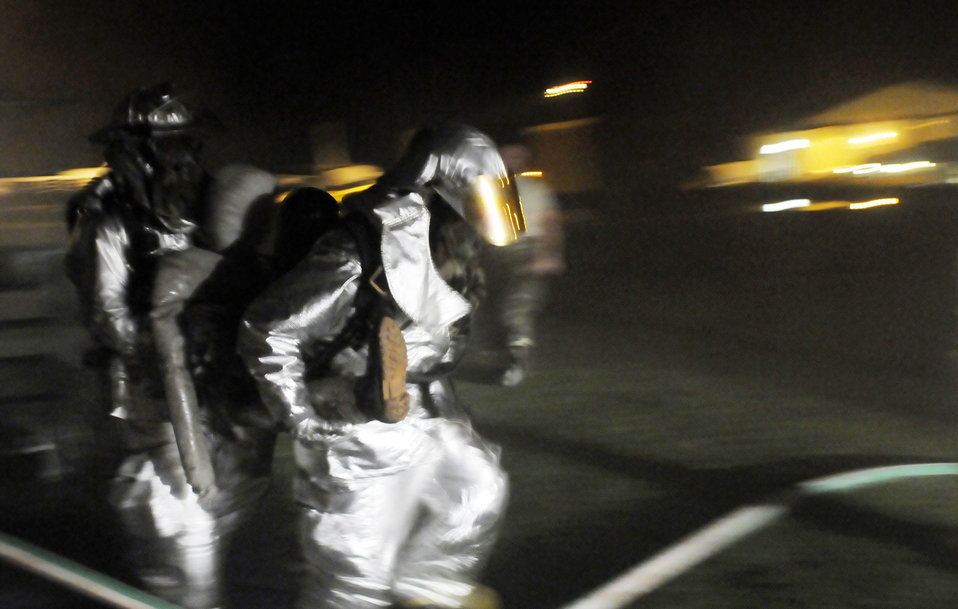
Working the night shift

Firefighters perform the fore and aft carry on a simulated building-fire victim during an exercise July 23 at Royal Air Force Mildenhall, England. The dummy is designed to weigh as much as an adult so the rescue is as real as possible without anyone actually getting hurt. The firefighters are assigned to the 100th Civil Engineer Squadron.